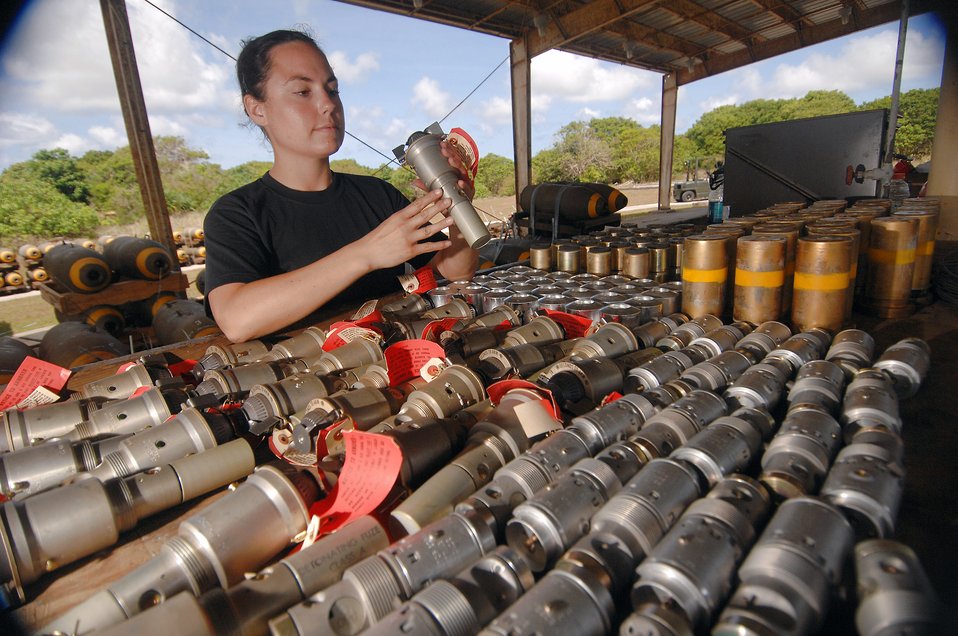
Munitions loaders arm B-52s

Senior Airman Julia Unsworth inspects nose fuzes before inserting them into bombs. Airmen in the 36th Munitions Squadron at Andersen Air Force Base, Guam, are assembling free-fall, unguided, general purpose 750-pound bombs that will eventually be loaded on a B-52 Stratofortress. In a conventional conflict, the B-52 can carry nuclear or precision-guided conventional ordnance with worldwide precision navigation capability. Airman Unsworth is deployed from the 2nd Maintenance Group at Barksdale AFB, La.